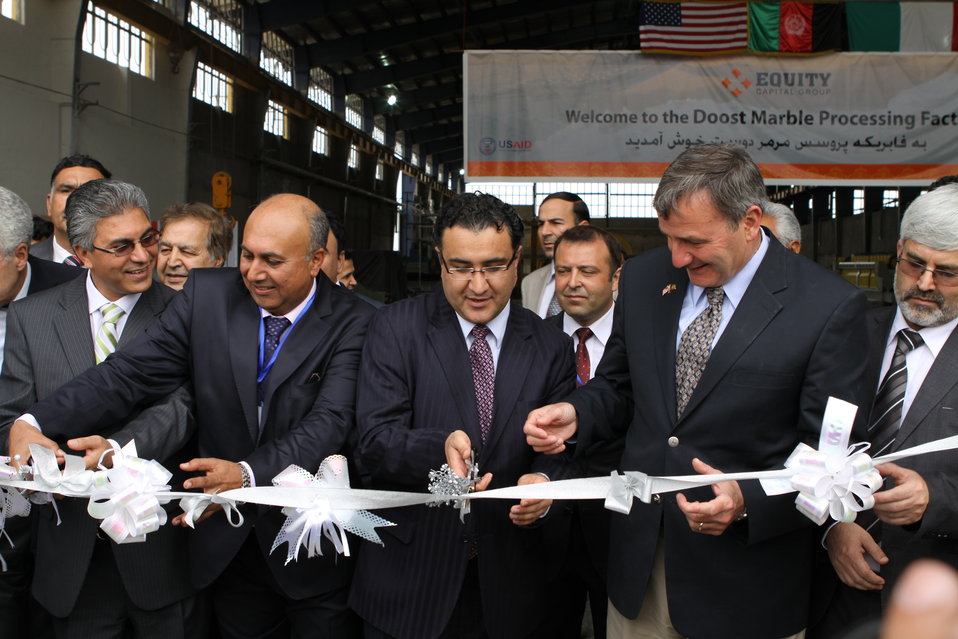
100525 Hirat Marble Conference 064